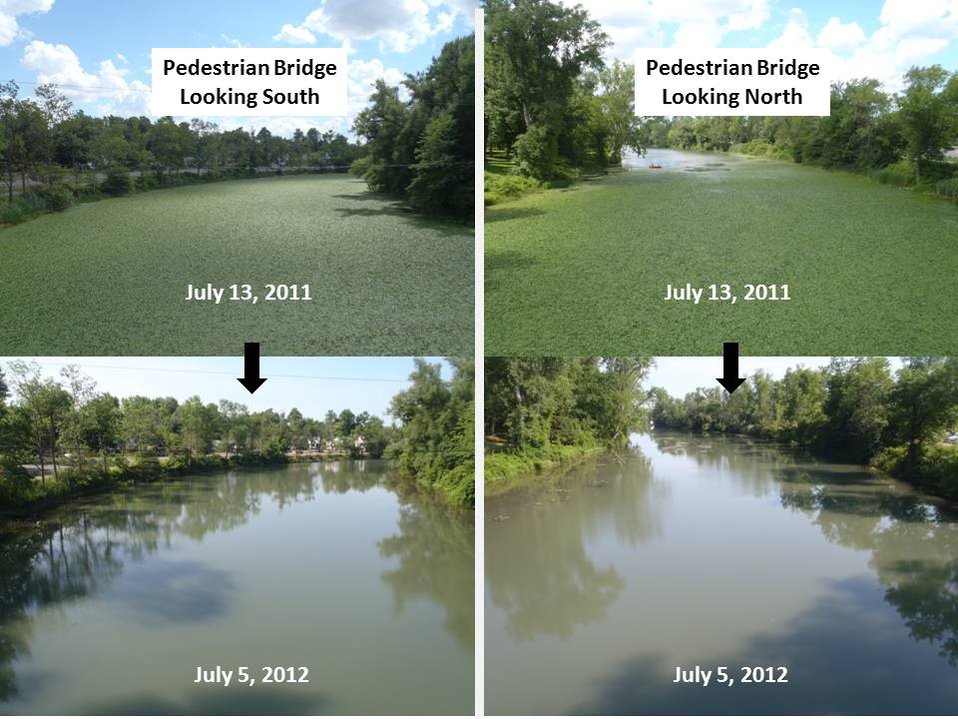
Water Chestnut Success

After four years of water chestnut control, Lower Great Lakes FWCO staff have observed a virtual elimination of invasive water chestnut in the Ellicott Creek Park portion of Tonawanda Creek. In 2010, 710 cubic yards of plants were harvested. In 2011, 560 cubic yards were harvested. In 2012, it is virtually 100% open water.